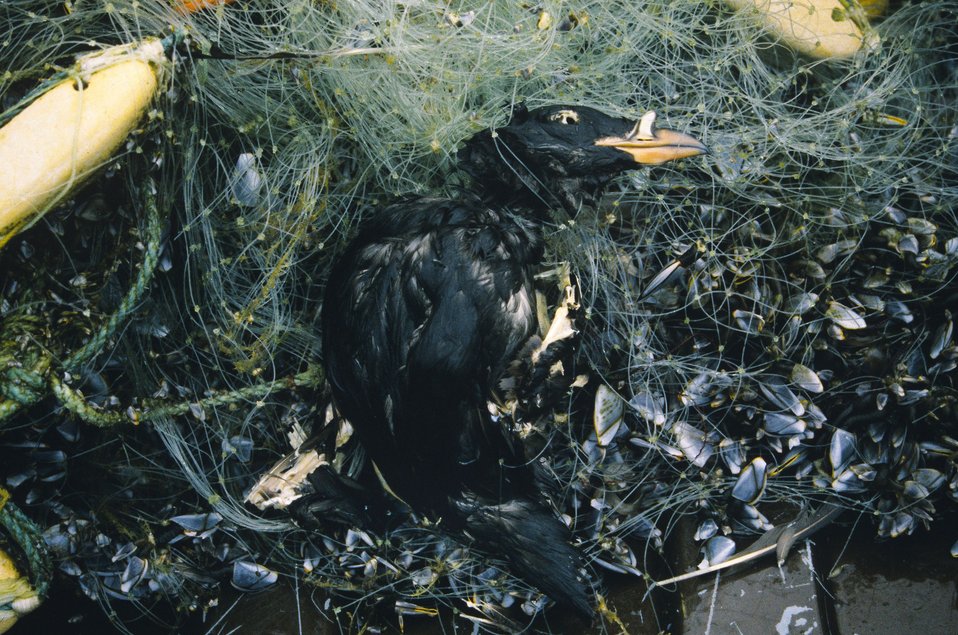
Drift net with bird, 2

A rhino caught in a drift net.